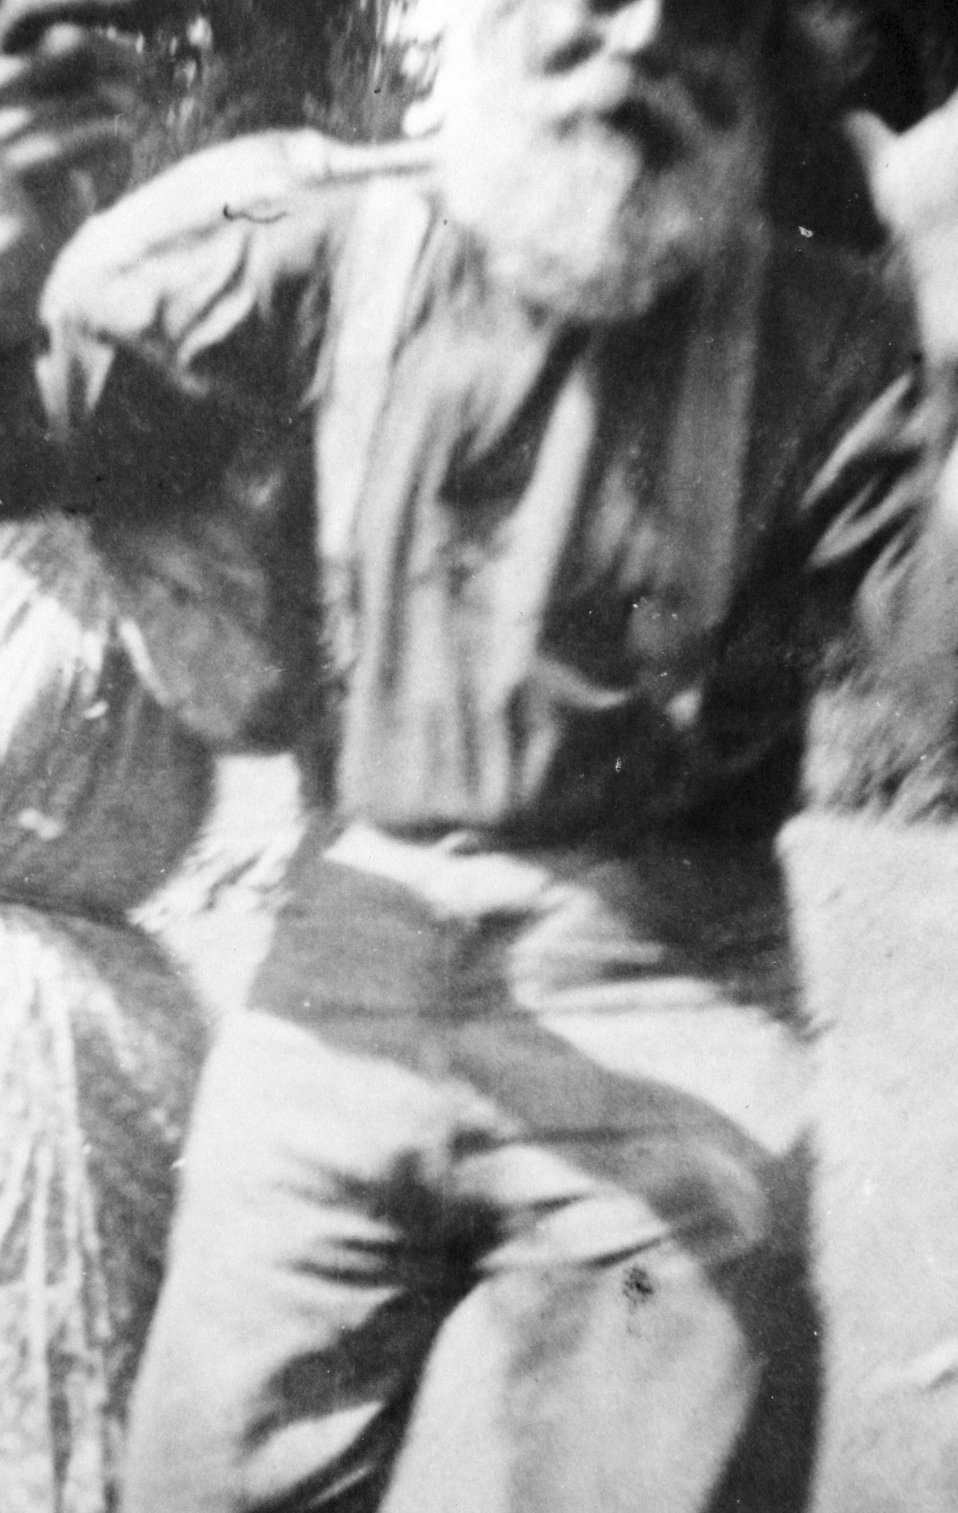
John Billings and Adeline. She is trying to give him a "Massoie". (ear tweaking)